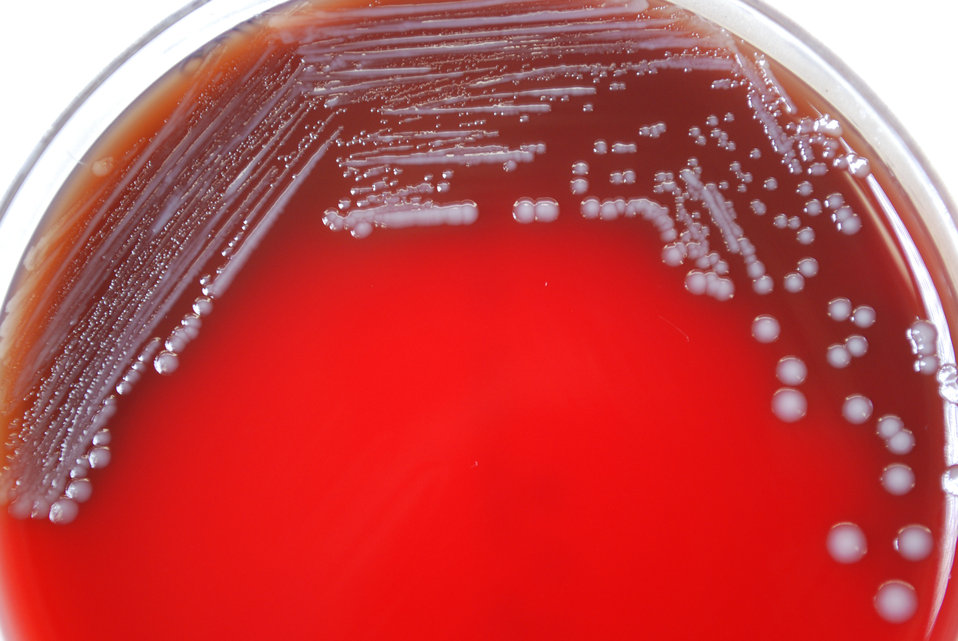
A closer view of PHIL 12259, this photograph depicts the colonial morphology displayed by Gram-negative Yersinia pestis bacteria, which was grown on a medium of sheep's blood agar (SBA), for a 72 hour time period, at a temperature of 37�C. Y. pestis bacteria cause the infectious disease known as plague, affecting both humans and animals.